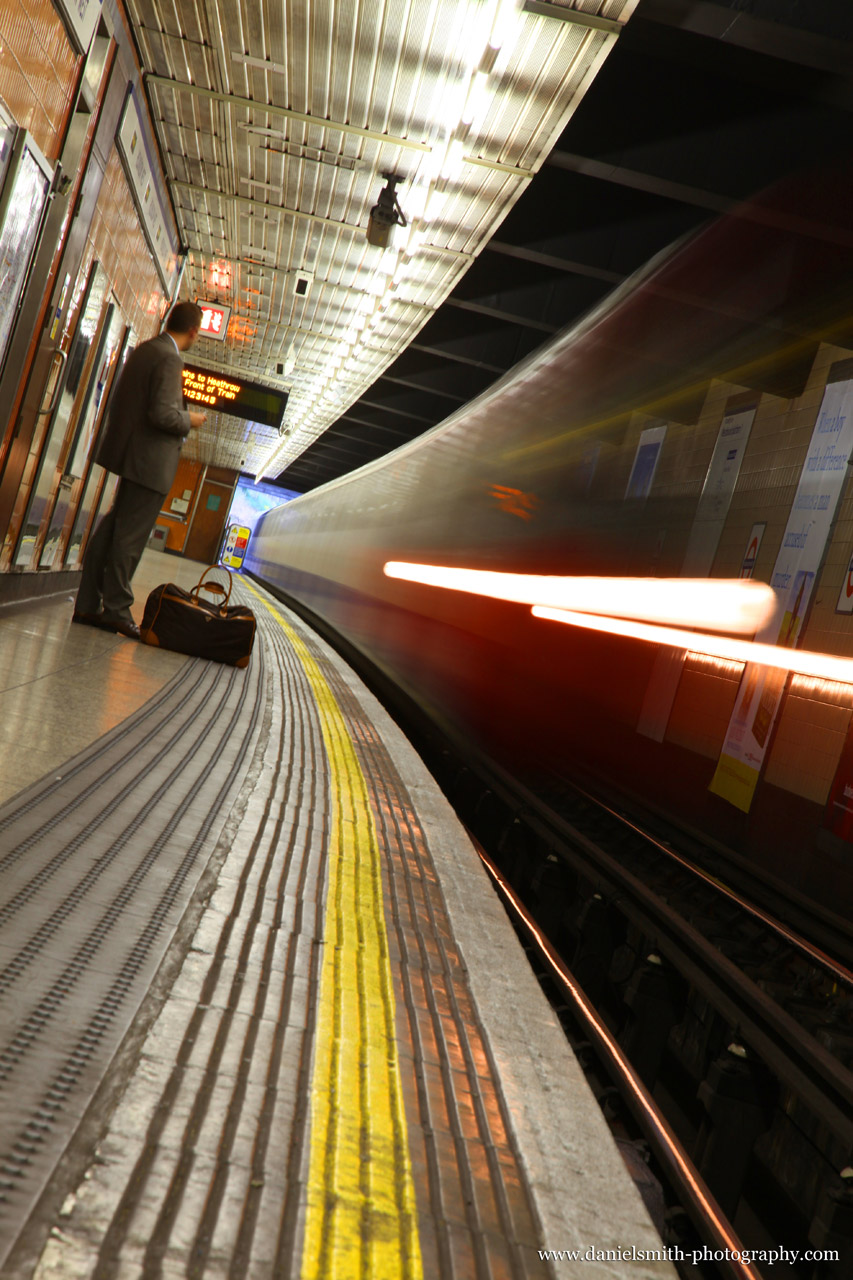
Underground train

A train pulling up to the platform in the london underground with man standing on platform..